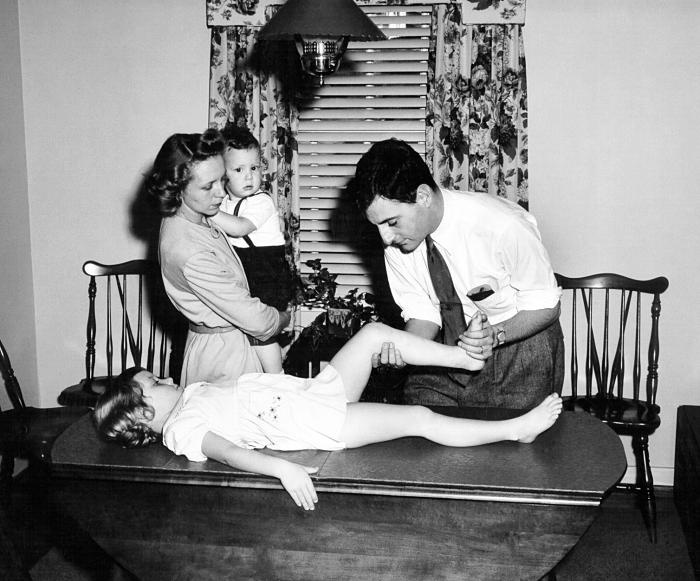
This historic image depicts an Epidemic Intelligence Service (EIS) Officer using a muscle evaluation test for polio on this young patient.